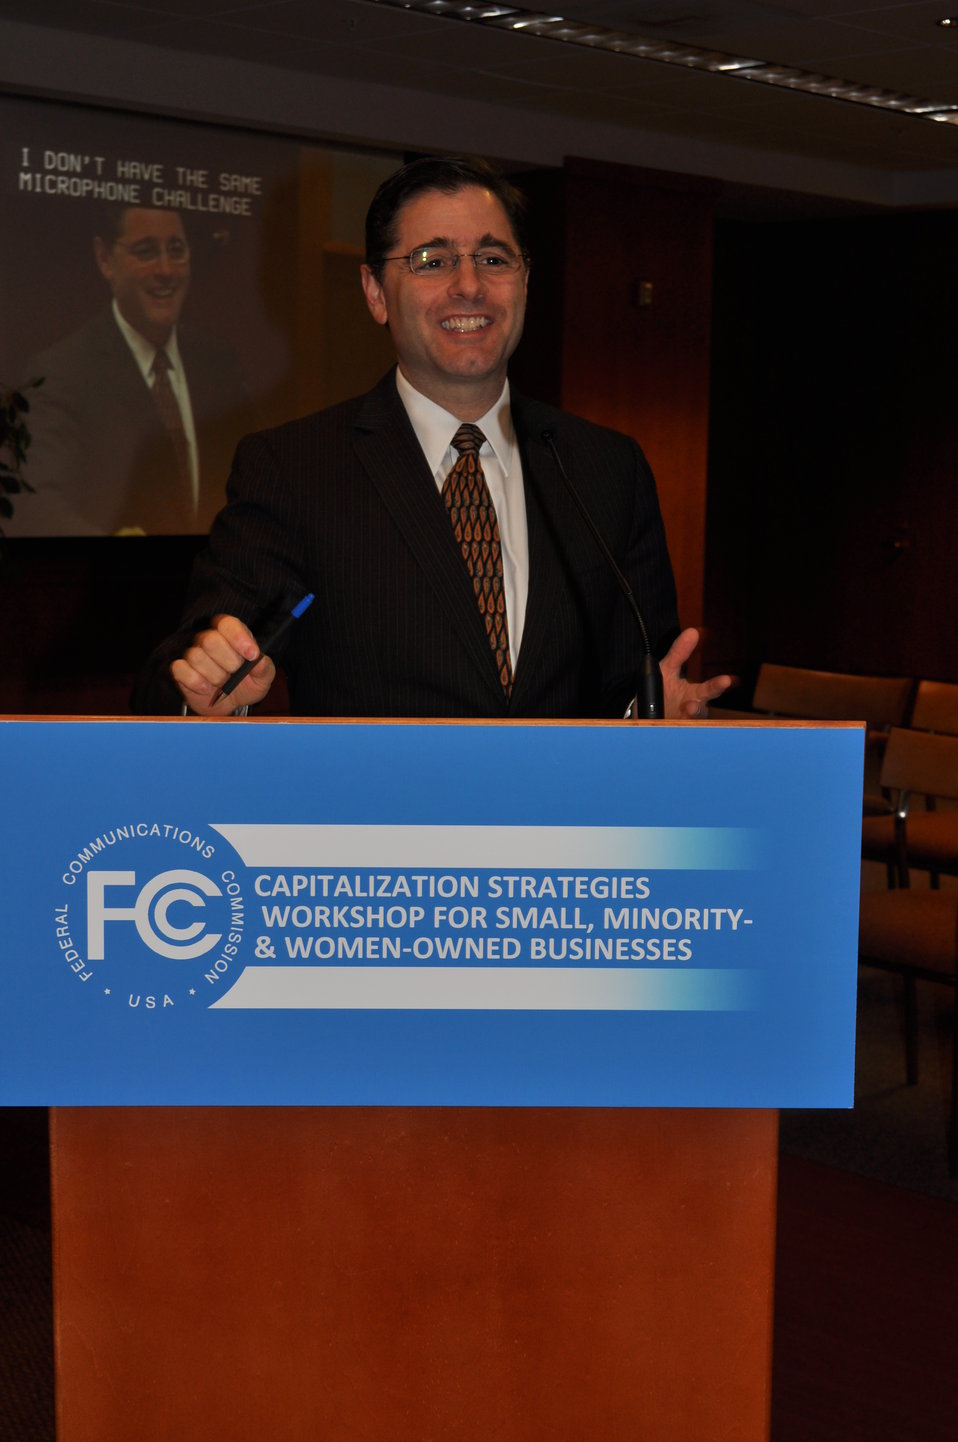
Capitalization Strategies

Workshop for small, minority and women owned businesses. Hosted by the Office of Communications Business Opportunities